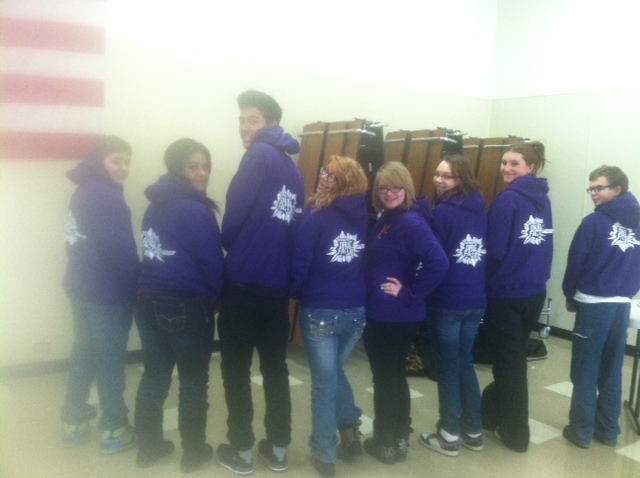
Teens Wear NDFW Hoodies

South Central Public Health provided activities at Mt. Harrison High School during NIDA's National Drug Facts Week in Heyburn, Idaho.
Teenagers from Mt. Harrison High School joined forces with other teens and scientists across the United States as part of the event.